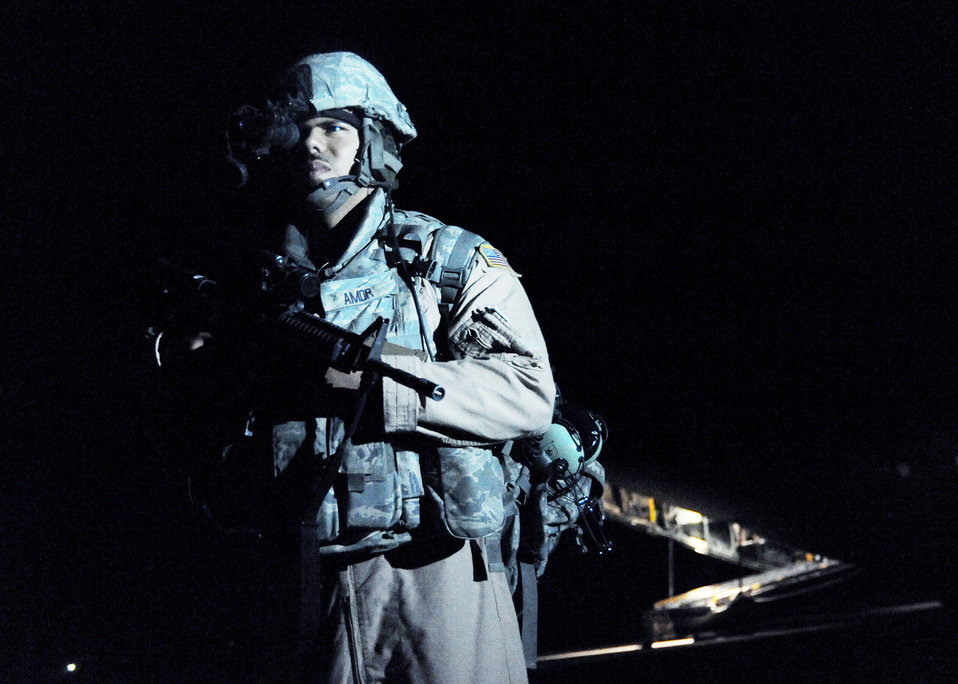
Don't come any closer

Staff Sgt. Chris Amor, 332nd Expeditionary Security Forces Squadron fly-away security team leader, scans his designated area as cargo is loaded on a C-130 Hercules at Qayyarah Airfield West, Iraq, Nov. 13, 2009. The team provides ground security, resources and crewmembers to neutralize possible threats to U.S. aircraft at airfields throughout the area of responsibility.